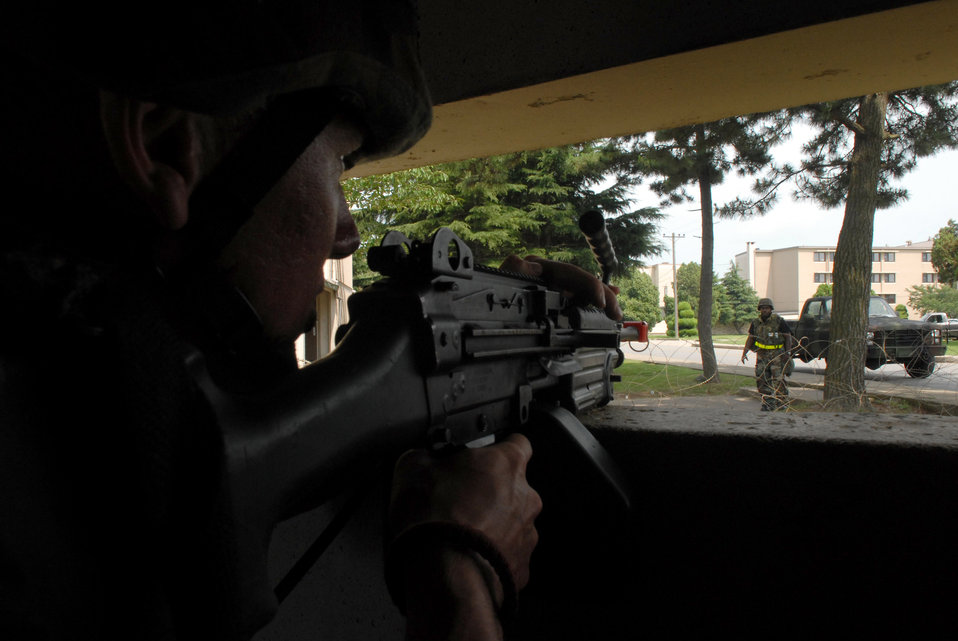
BEVERLY BULLDOG

Senior Airman Christopher Kaffer challenges Staff Sgt. Derrick Spencer at an entry control point July 22 at Kunsan Air Base, South Korea. The Airmen are participating in a peninsula wide operational readiness exercise, BEVERLY BULLDOG 08-03, held to train U.S. forces throughout South Korea. Airman Kaffer is with the 8th Security Forces Squadron.